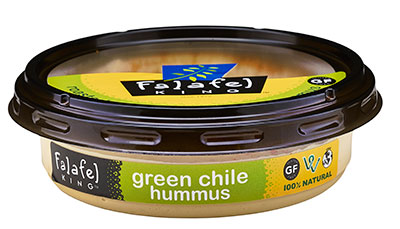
RECALLED – Green Chile Hummus and Wraps

February, 20 2014 – Product Recall – Falafel King Voluntarily Recalls Hatch Green Chile Hummus and Hatch Green Chile Wraps Because of Possible Health Risk.